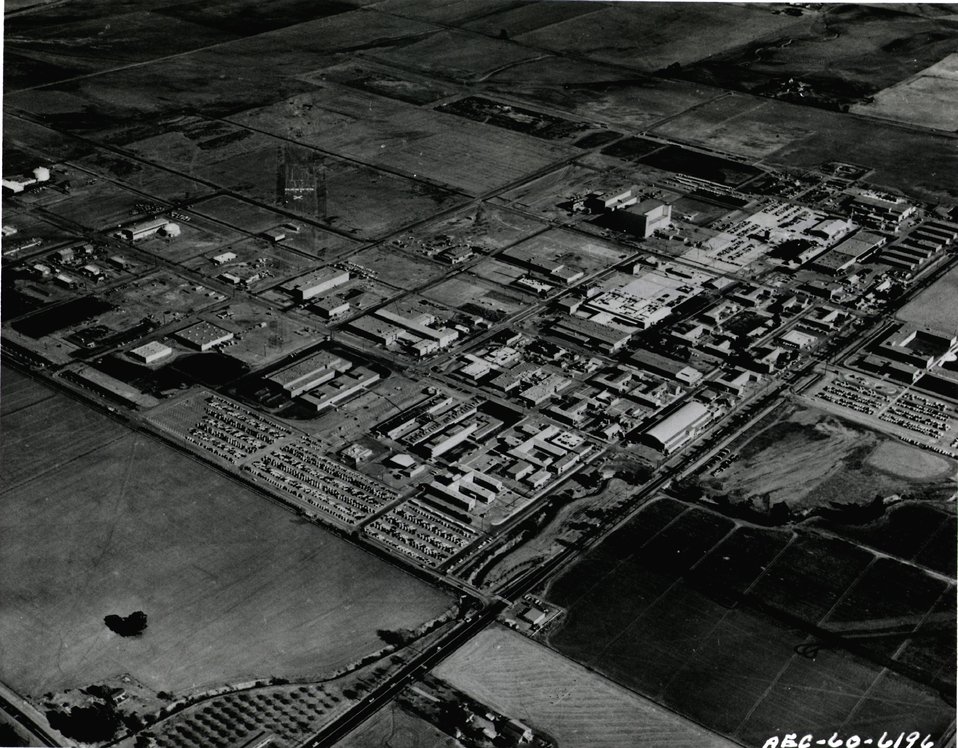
A new biology laboratory at Hanford Works, near Richland, Washington consolidates under one roof for biology and ecology research, The new biology laboratory is of reinforced concrete construction, with an area of 90,000 square feet, and has been erected at the main Pacific Norhtwest Laboratory site. Circa 1971.